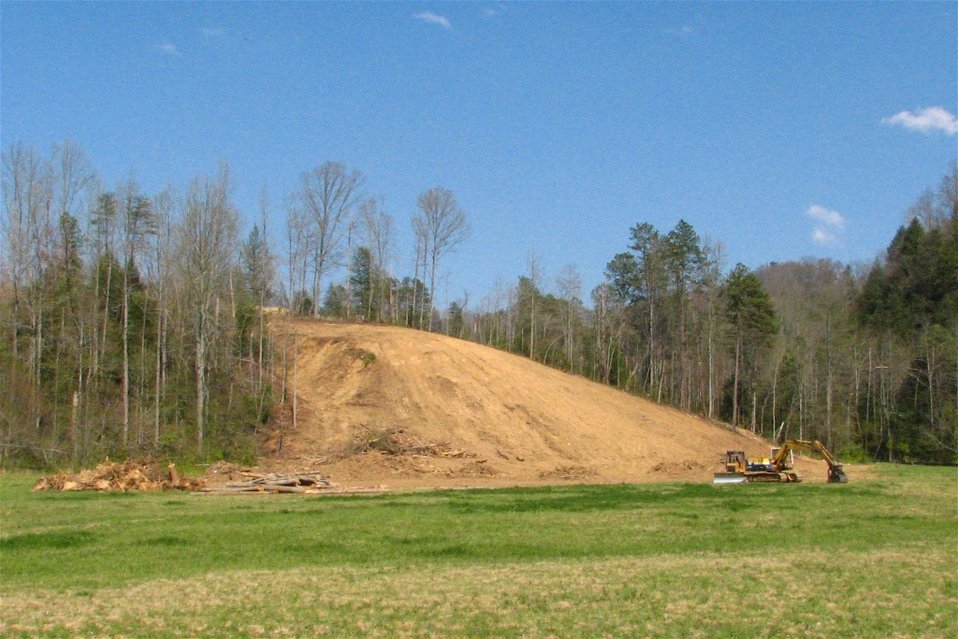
Uploaded by request of Bruce Kamplain.

It was taken near Savannah, GA on a drive from Charleston, SC.

After seeing all the beauty in Charleston and several nearby plantations with their marvelous land-scaped gardens, flowers and water, it was with dissatisfaction to see this scrapping of the land by a trackhoe. Altering nature to fit man’s ideas has been taking place since man first set foot on this planet. We must remember that this is the only planet that we will have [for the time being] and we must treasure it